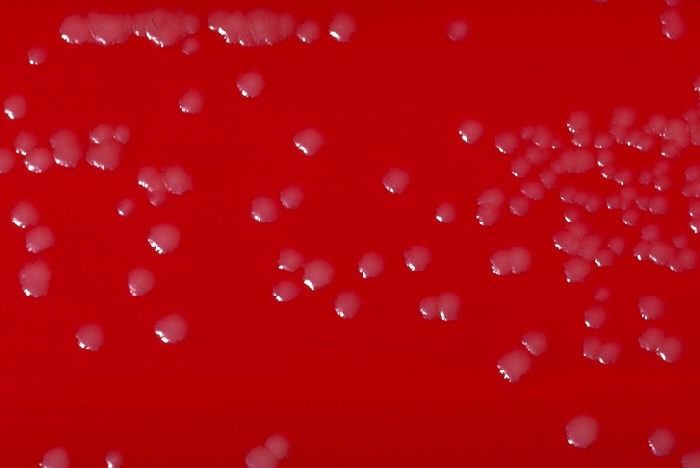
Blood agar plate culture of Corynebacterium renale.